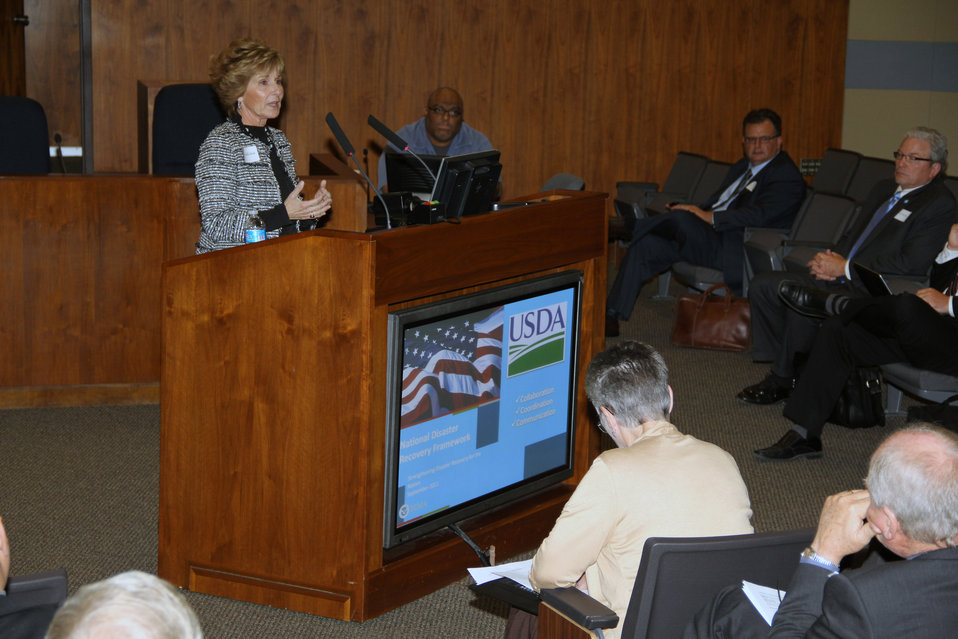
Federal Disaster Recovery Coordinator Colleen Callahan facilitates the closing session at the Federal Drought Meeting in Omaha, NE on Tuesday, Oct. 9, 2012. The U.S. Department of Agriculture (USDA) is partnering with local, state and federal partners to hold the workshops, working closely with the Department of Commerce, the Small Business Administration and the Federal Emergency Management Agency to facilitate these meetings.